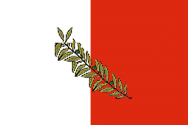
2008-07-26T09:24:57Z OsamaK (Talk